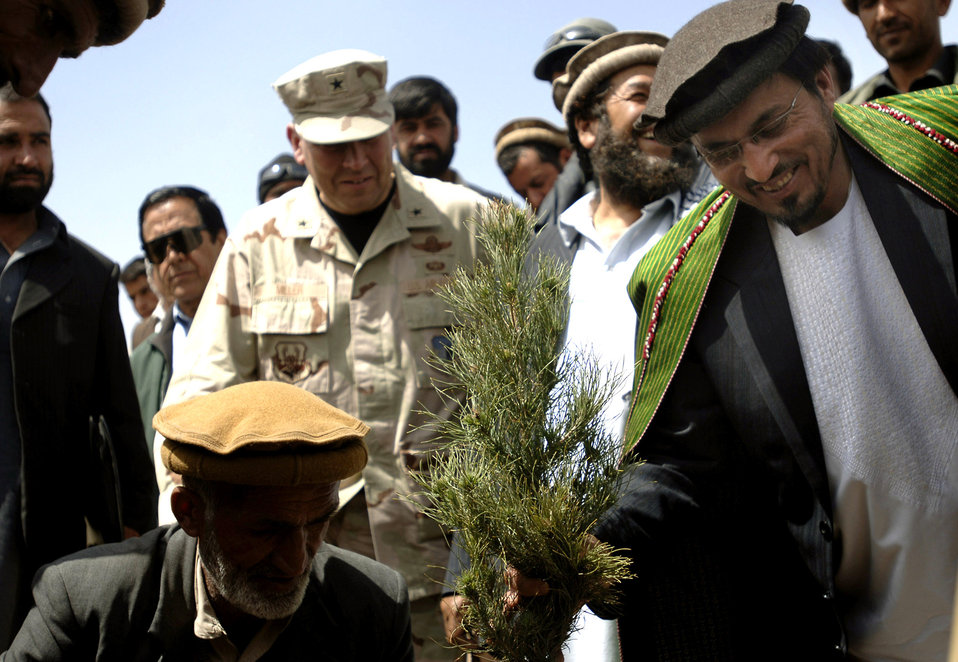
Planting a future

Brig. Gen. Christopher Miller, 455 Expeditionary Wing commander, helps Hamidulla Hatam, a local education official, plant one of 3,000 pine and fruit tree saplings March 26 in Deh Baba Ali, Afghanistan. The trees were donated by the U.S. Bagram Provincial Reconstructive Team.